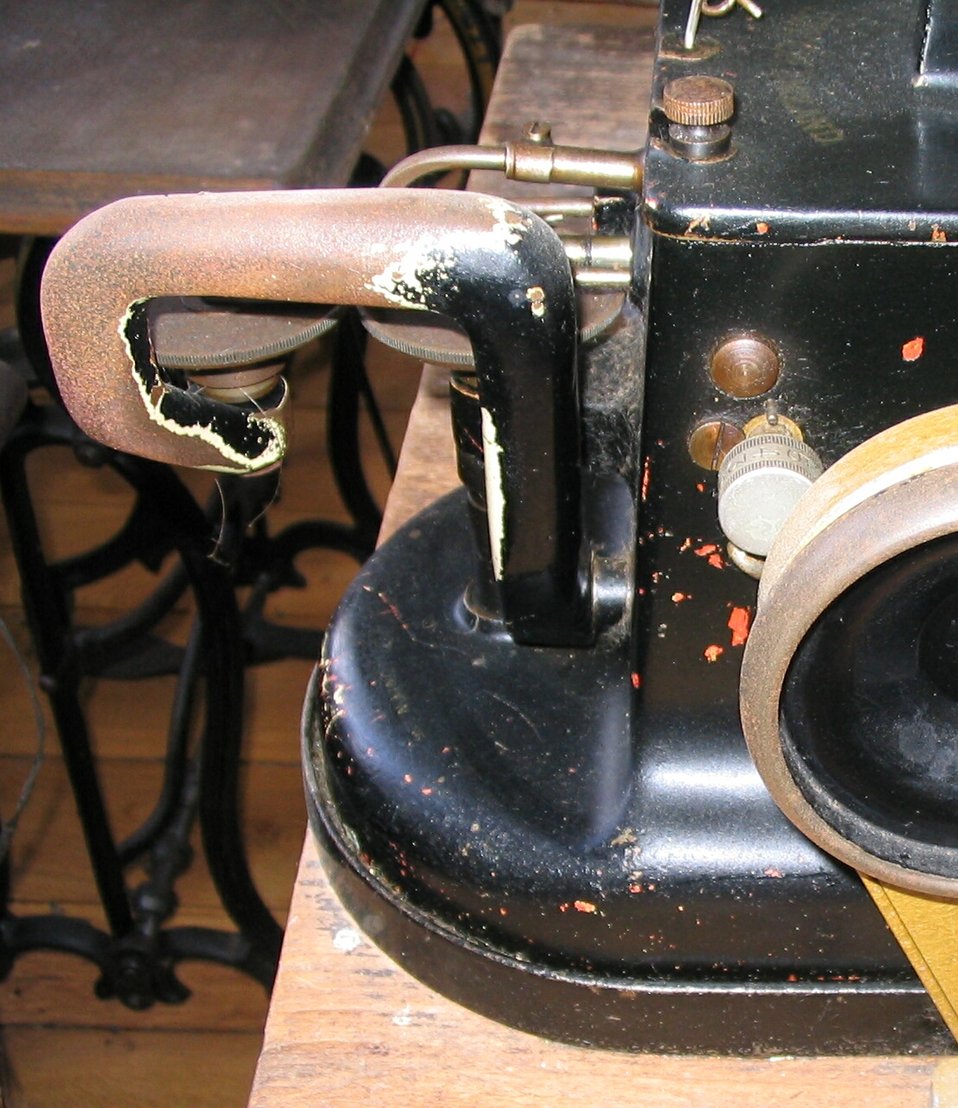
Deutsch: Pelznähmaschine (Westfälisches Freilichtmuseum Hagen)